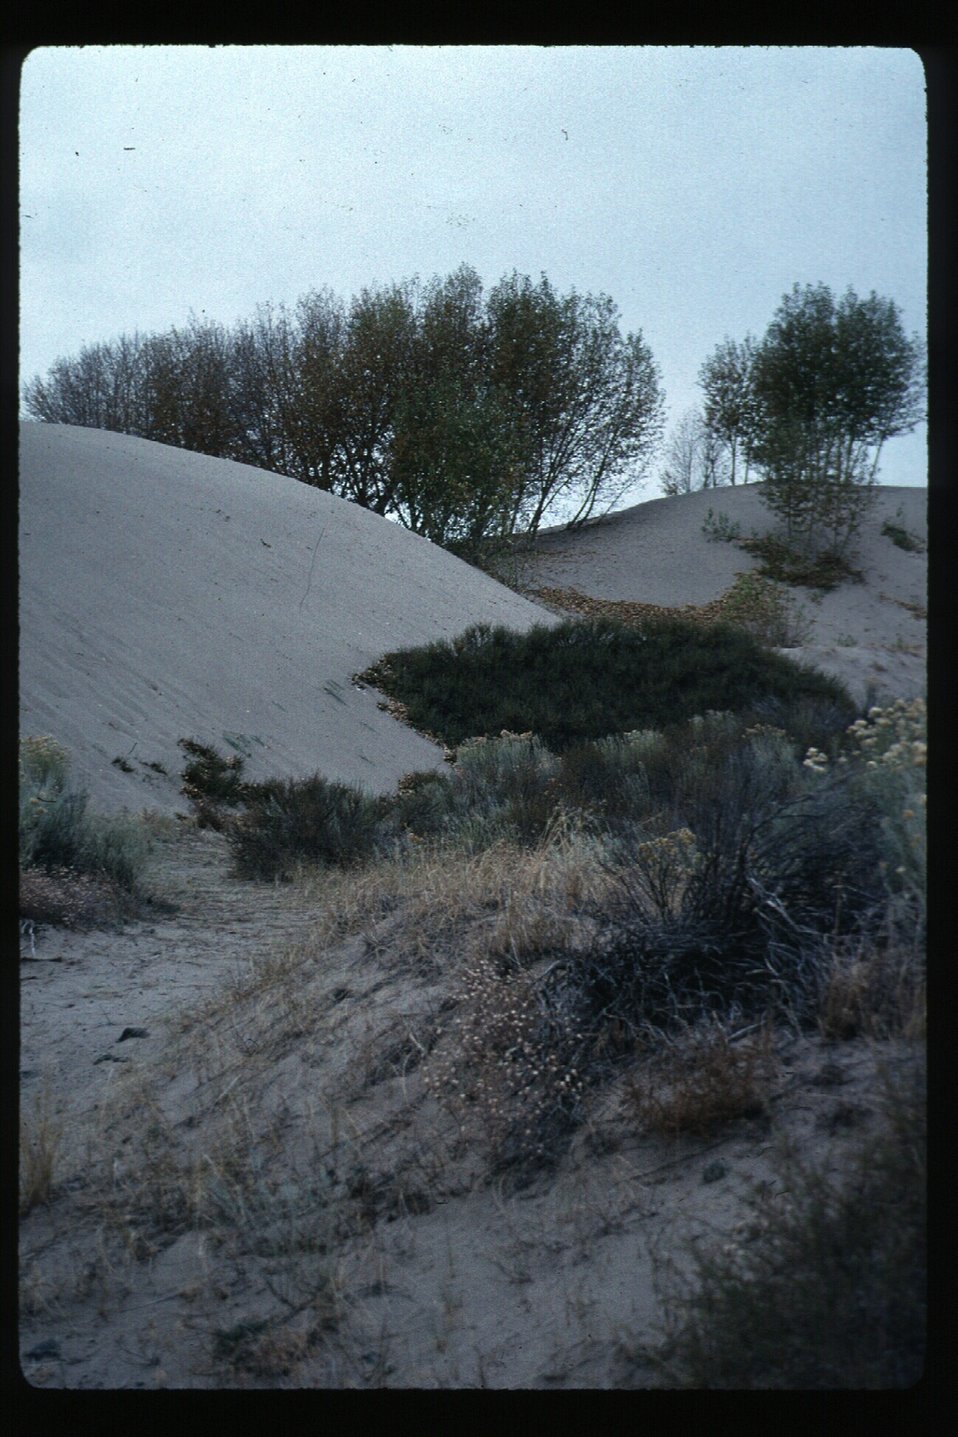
Recreation St Anthony Sand Dunes Off Highway Vehicles Idaho Falls Field Office USRD Upper Snake River District